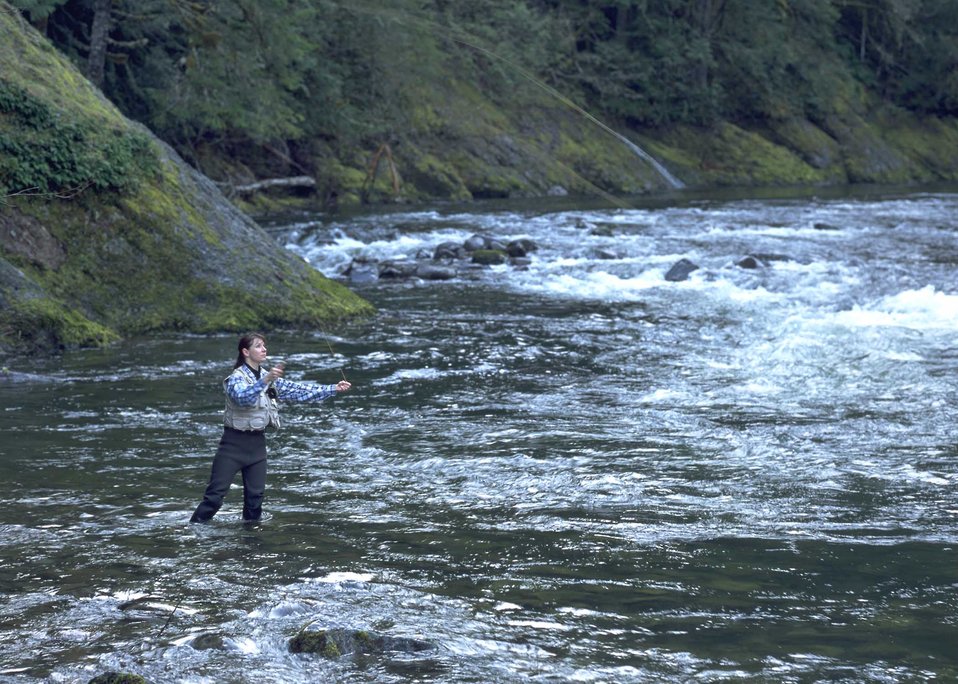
Recreationalist, Gayle Norman, fly fishing in a mountain stream. Many water managers use NRCS's snow survey data to manage streams for recreation.